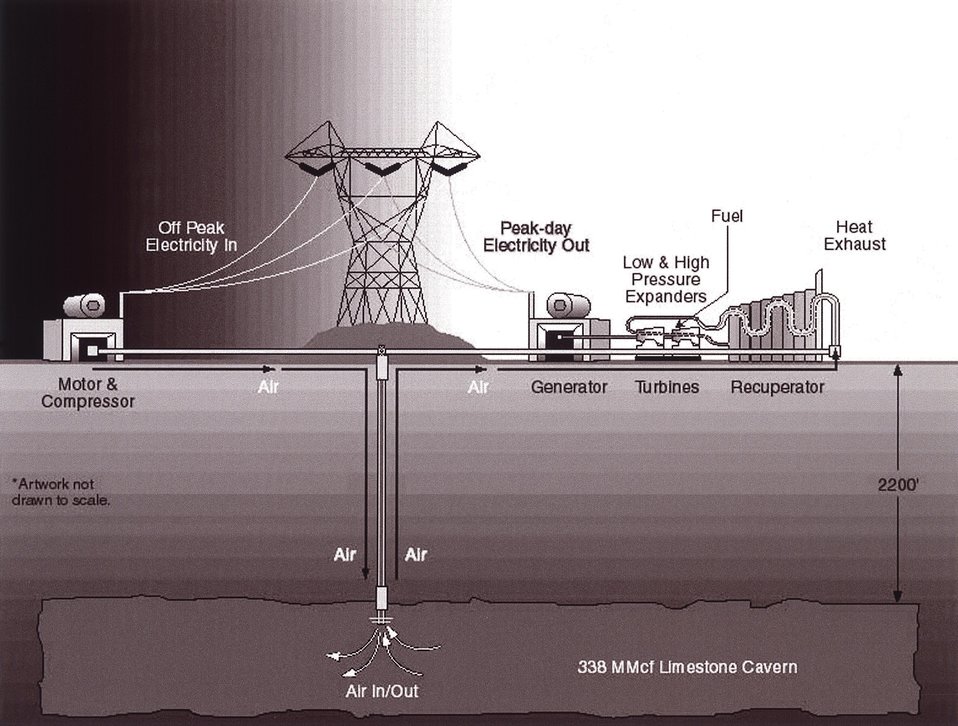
ARTIST'S SKETCH OF THE COMPRESSED AIR ENERGY STORAGE CONCEPT.

SANDIA RESEARCHERS ARE TESTING THE FEASIBILITY OF USING AN INACTIVE LIMESTONE MINE IN NORTHEASTERN OHIO AS THE STORAGE VESSEL FOR A COMPRESSED AIR ENERGY STORAGE POWER PLANT. OFF-PEAK ELECTRICAL POWER IS USED TO COMPRESS AIR INTO AN UNDERGROUND AIR STORAGE VESSEL(THE MINE) AND LATER THE AIR IS USED TO FEED A GAS FIRED TURBINE GENERATOR COMPLEX TO GENERATE ELECTRICITY DURING ON-PEAK TIMES.